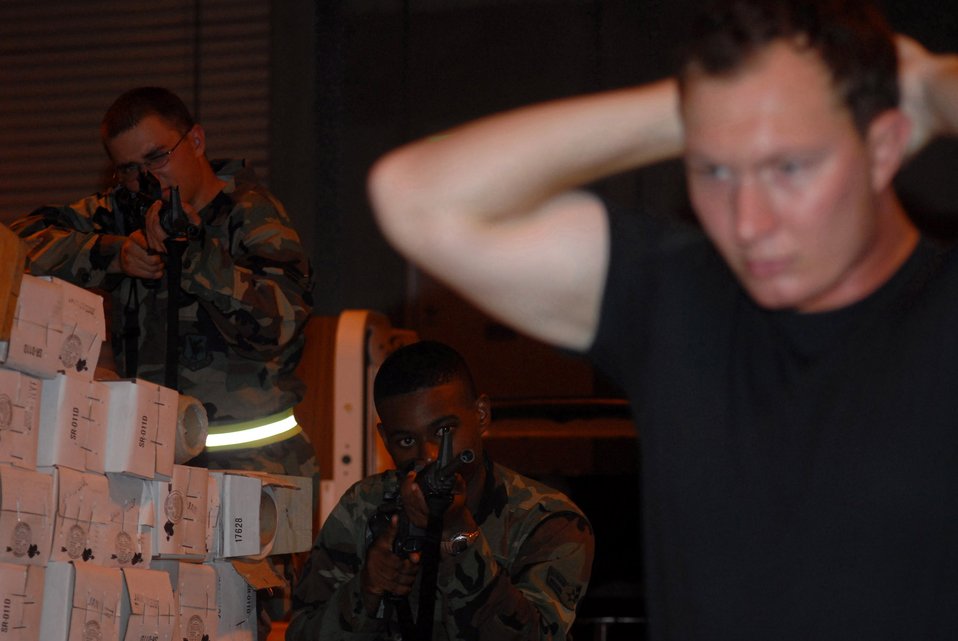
Kadena begins selective arming program

Airmen 1st Class Johnathan Meyer (left) and Gilbert Hardy challenge Senior Airman Charles Johnson during a base exercise Aug. 24 at Kadena Air Base, Japan. Both Airmen took the selective arming course, which enables them to protect base members and assets. The base conducted a three-day exercise to demonstrate its ability to deploy and generate aircraft. All three Airmen are assigned to the 18th Civil Engineer Squadron.